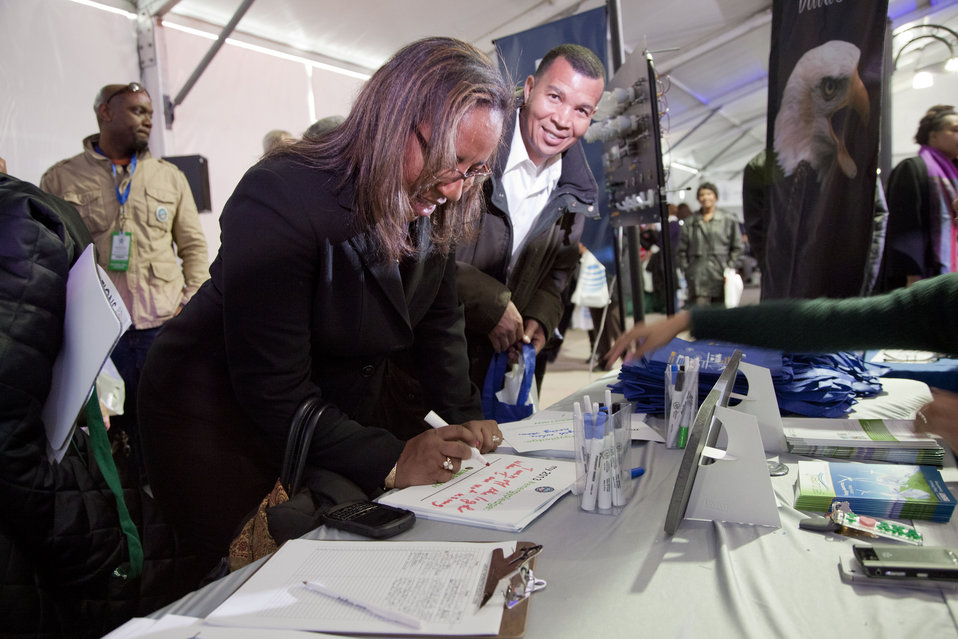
What's your #energypledge?